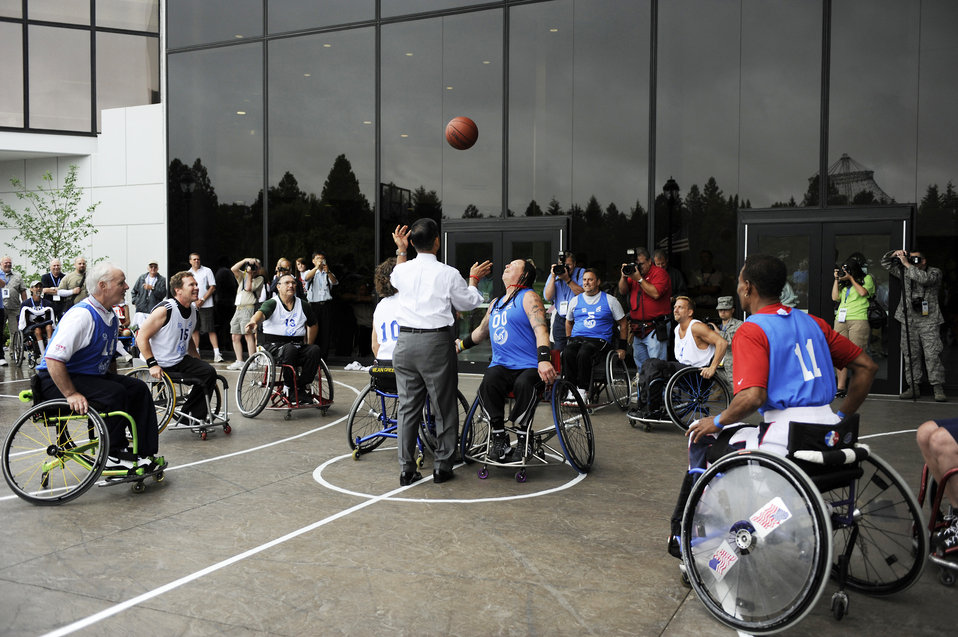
Let's play!

Secretary of Veterans Affairs Eric K. Shinseki throws the basketball tip off July 13 for the start of the 29th National Veterans Wheelchair Games in Spokane, Wash. More than 500 veterans met at the convention center to take part in the games July 13 through 19.